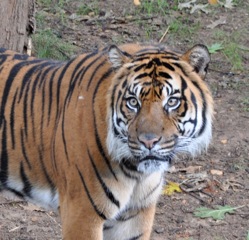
Save Vanishing Species Stamp First Day of Issue